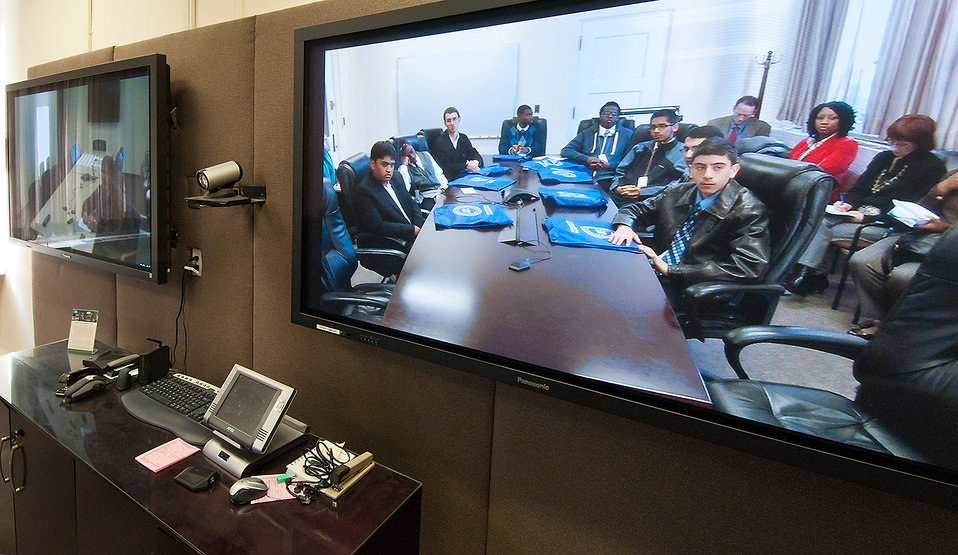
Students from Edison Academy in Fairfax, VA listen to U.S. Department of Agriculture (USDA) Office of Chief Information Officer (OCIO) Acting Associate Chief Data Center, National Information Technology Center, Denver CO James Stevens via a video link from USDA in Washington, D.C. during the USDA OCIO Information Technology (IT) Job Shadow Day held by the USDA OCIO to introduce local high school students to careers in information technology in Washington, D.C. on Tuesday, Apr. 2, 2013.